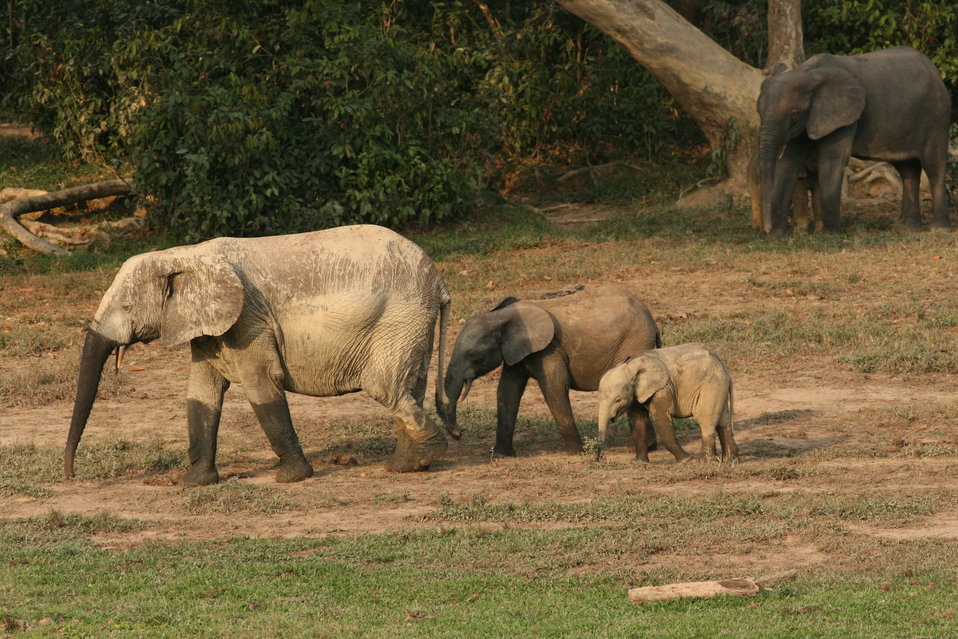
Forest elephant group 5

Elephants can be individually recognized by their ear shape and patterns.